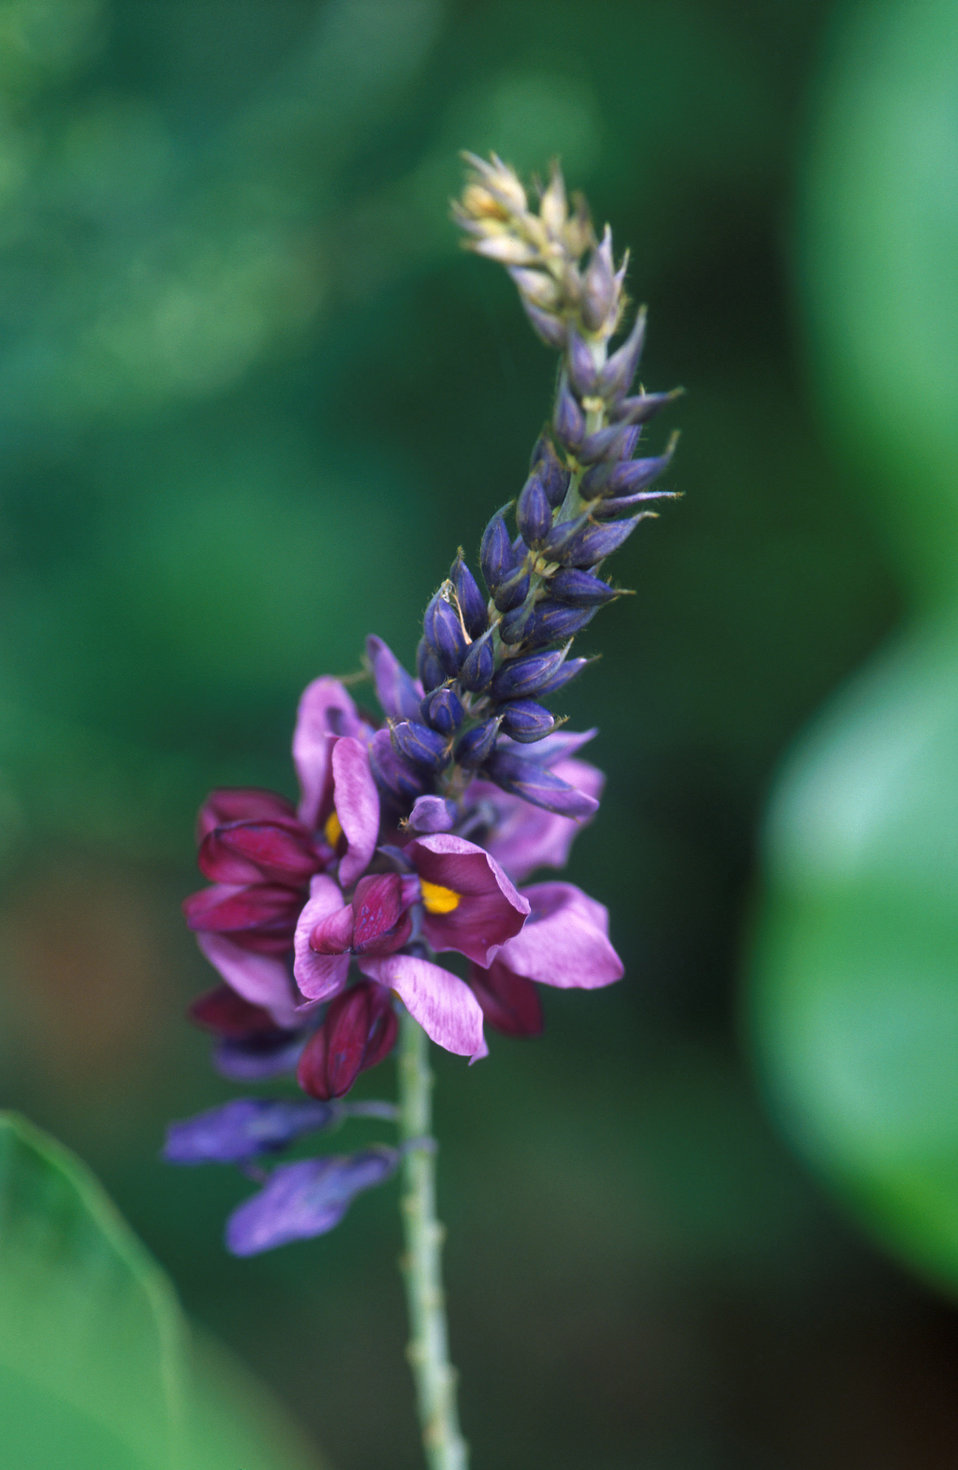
Flowering kudzu is a fast-growing legume with a grapelike odor.